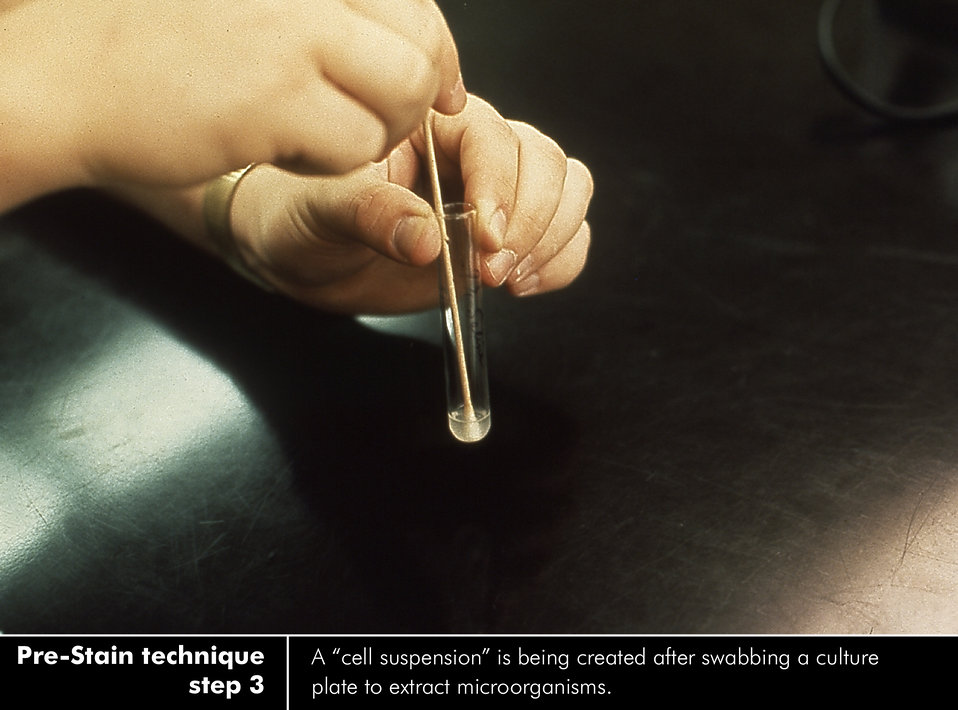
Pre-stain technique - Step 3 of 5. See PHIL ID#'s: 3431, 3572, 3432, 3565, 3428 for the complete set.